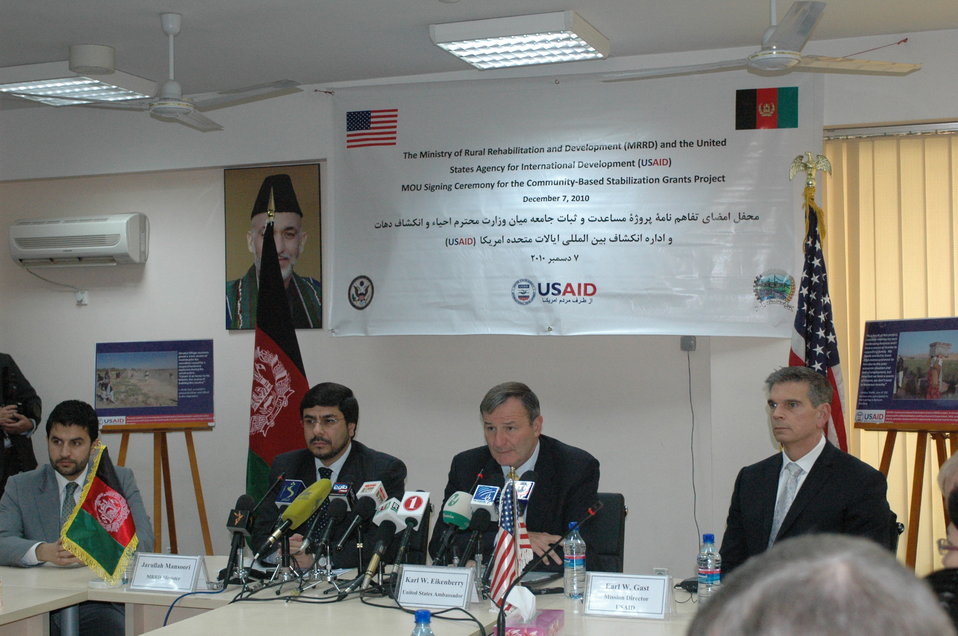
Community Based Stabilization Grants Ceremony, December 7, 2010